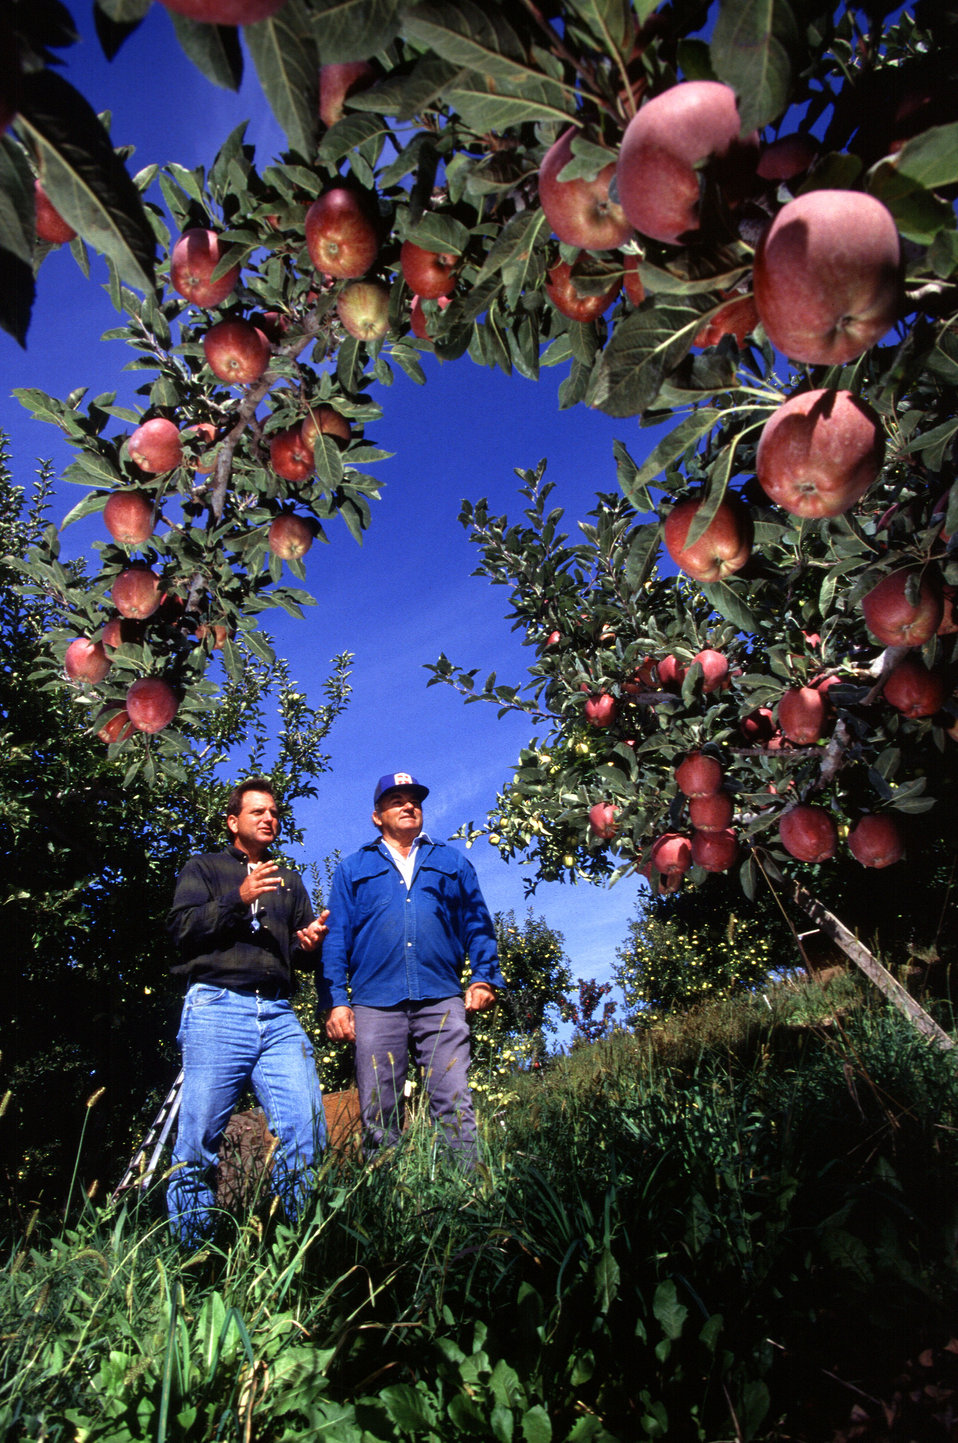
U.S. Department of Agriculture (USDA) Agriculture Research Service (ARS) entomologist Brad Higbee explains the benefits of area wide insect pest suppression to apple orchard manager Jerry Wattman in West Parker Heights, WA.